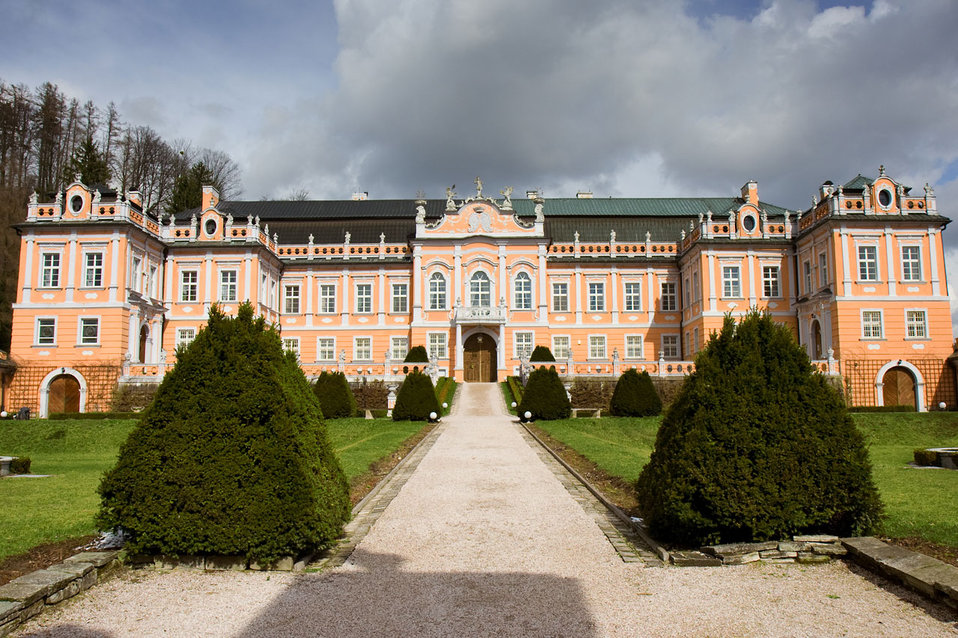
Nove hrady castle

A nice castle in east bohemia.